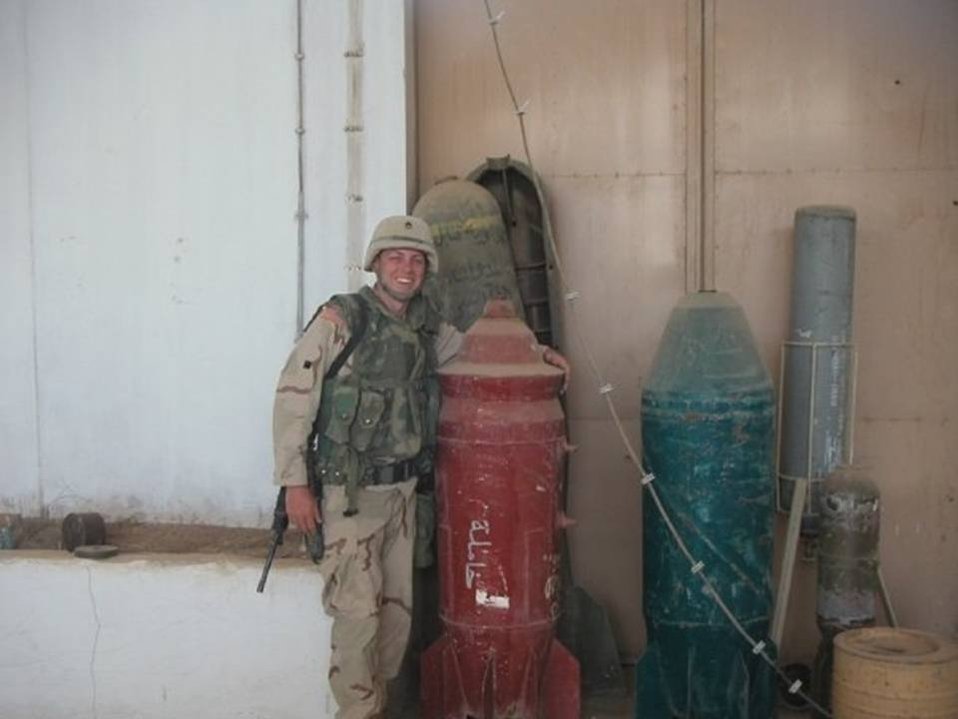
Stan Zazado -- Southeast Region

Stan Zazado

Stan Zazado, initially entered the U.S. Army in June 1990 and served until November 1994. He re-entered the U.S. Army in April 1999 and Served until October 2004. During his military career he was assigned to Fort Leonardwood, Mo., Fort Stewart, Ga., Camp Able Sentry Macedonia, Camp Bond steel, Kosovo, assigned to three different units, on two tours in Germany, and served one year in Iraq from 2003-2004. He served 11 years of active duty and departed as a Staff Sergeant (E6).

Zazado’s military and professional awards and accomplishments include a Bronze Star, two Army Commendations Medals, two Army Achievement Awards, two Army Good Conduct Medals, the Major General Aubrey “Red” Newman Leadership Award, he graduated top of his class and was the distinguished graduate from a Primary Leadership Development Course (PLDC), was the Sapper Leader, Leadership award recipient at the Basic Non-Commissioned Officer Course (BNCOC), and was awarded the Department of Interior’s “Safety and Health Group Achievement” Award.

Stan is now the Southeast Region Heavy Equipment Coordinator.